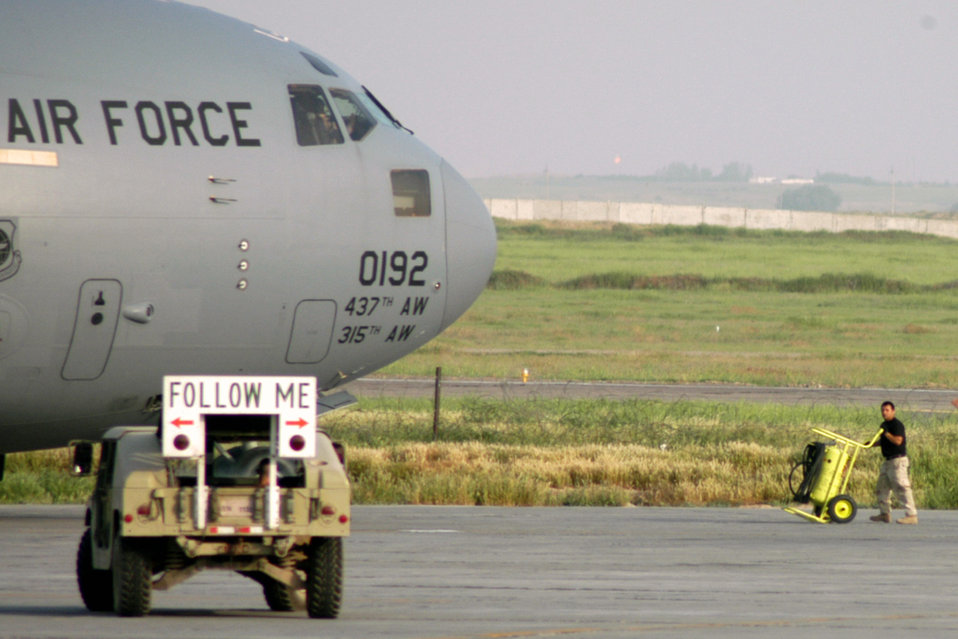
Transient alert Airmen handle diverse role

KARSHI-KHANABAD AIR BASE, Uzbekistan -- Staff Sgt. Sammy Ayala positions a fire bottle while preparing a C-17 Globemaster III for parking April 28. He is a transient alert Airman and KC-10 Extender crew chief with the 416th Air Expeditionary Group's transient alert flight. He is deployed from Travis Air Force Base, Calif.